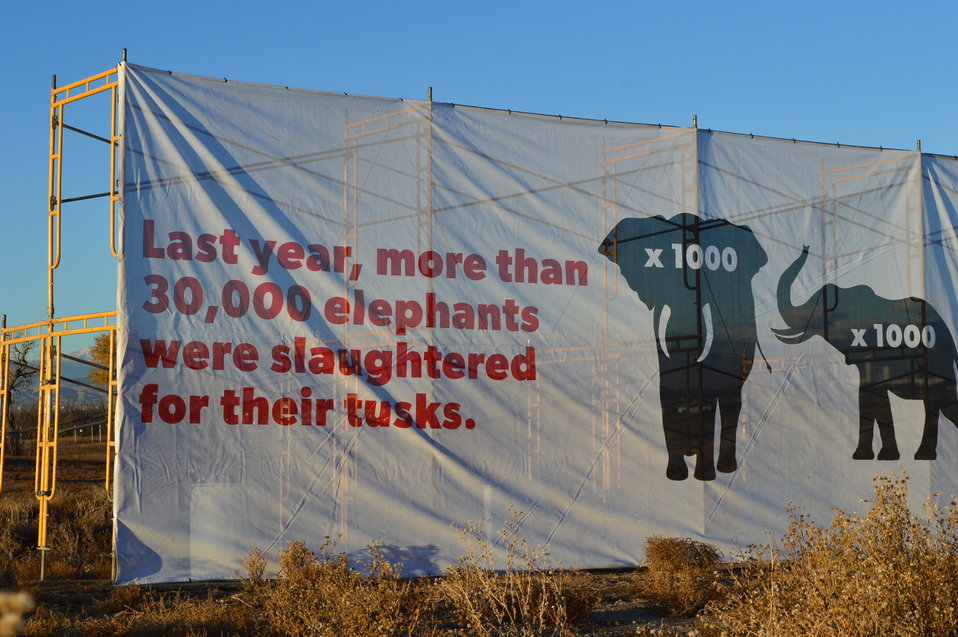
The wall begins